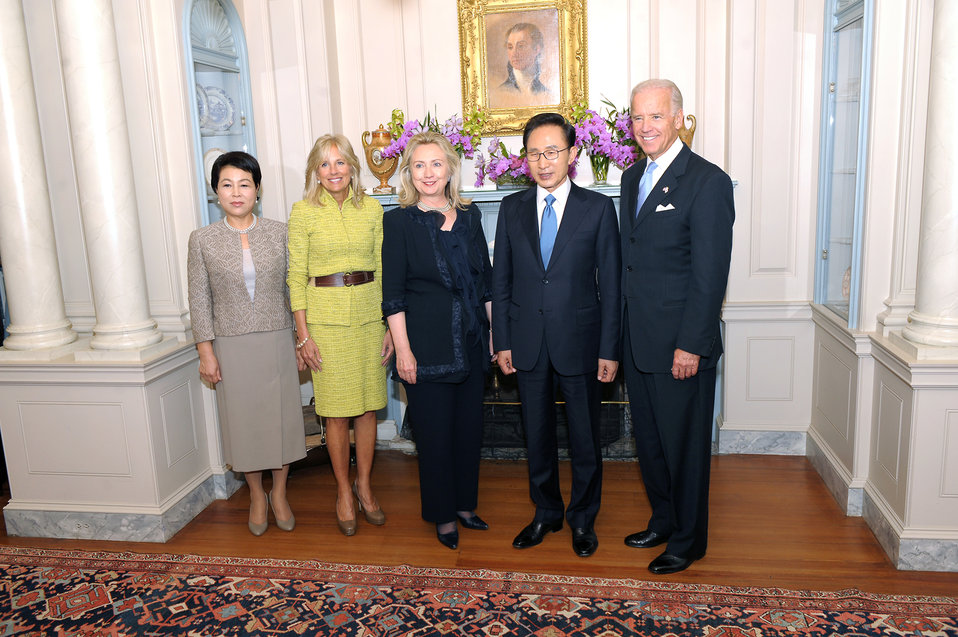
Vice President Biden, Republic of Korea President Lee, Secretary Clinton, Dr. Biden, and Mrs. Kim Pose for a Photo

U.S. Vice President Joseph Biden, right; Republic of Korea President Lee Myung-bak, second to right; U.S. Secretary of State Hillary Rodham Clinton, center; Dr. Jill Biden, second to left; and Mrs. Kim Yoon-Ok, left; pose for a photo at the U.S. Department of State in Washington, D.C., on October 13, 2011.